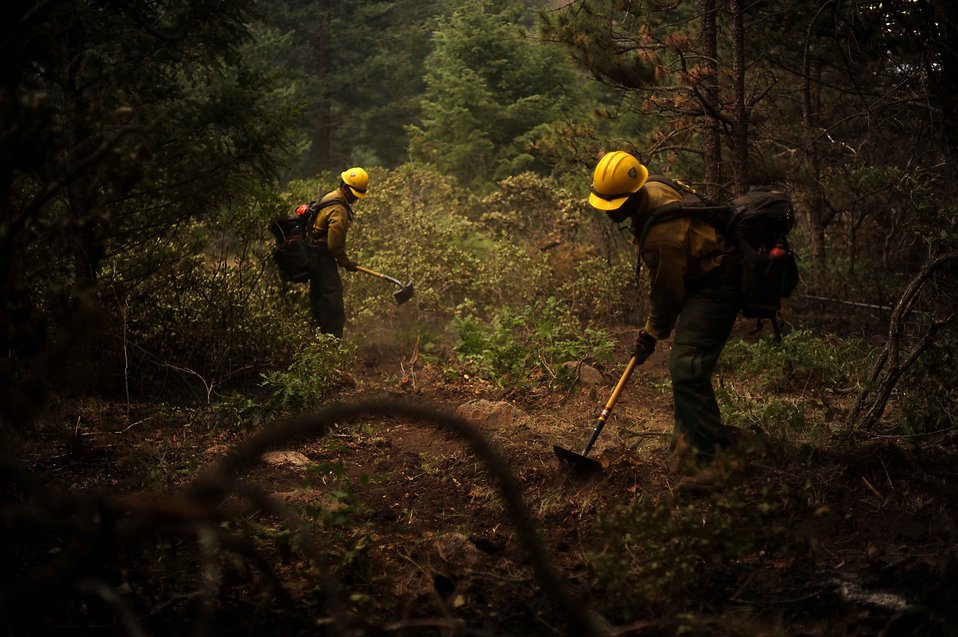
Team work

Nathan Ogan and Chris Loung cut a fire line in the Mount Saint Francois area of Colorado Springs, Colo., while helping to battle several fires in Waldo Canyon on June 28, 2012. The Waldo Canyon fire has grown to 18,500 acres and burned over 300 homes. Both Ogan and Loung are firefighters with the Vandenberg Air Force Base, Calif., Hot Shots.